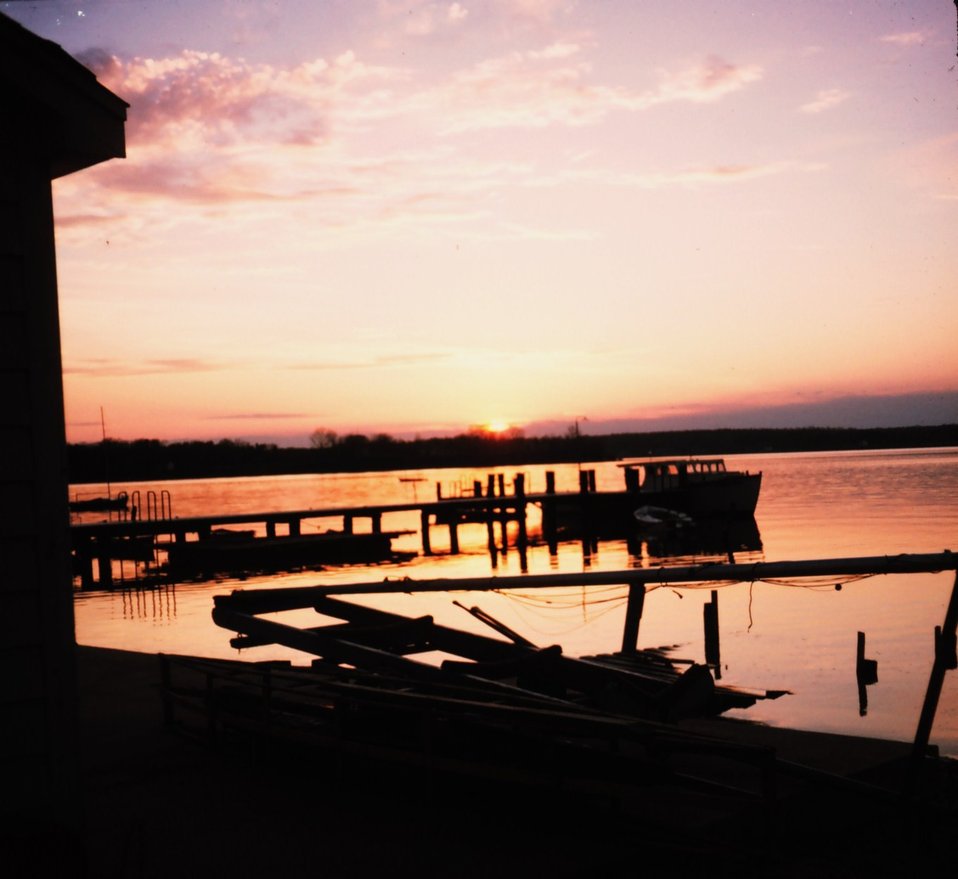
Sunset over the St. Mary's River from the boathouse at St. Mary's College of Maryland.